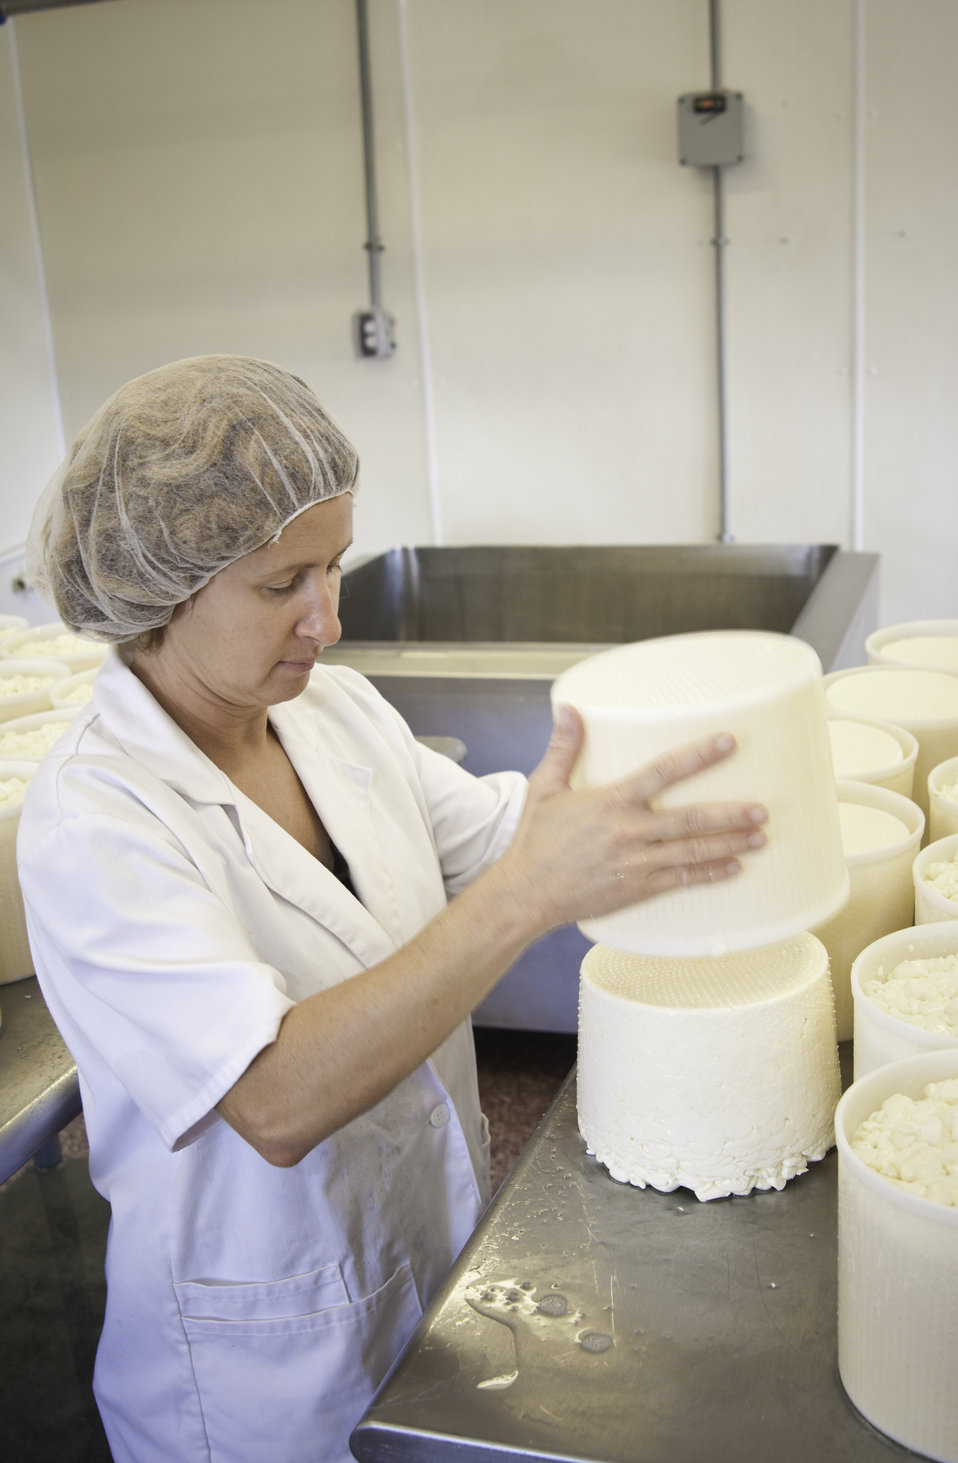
Chapel’s Country Creamery owner Holly Foster in Easton, MD turns milk curd in the hooping process. The curd will drain in the cheese hoops for 24 hours being turned during the process until the whey has drained and the curd has settled in a cheese round. The cheese is then aged 60 days or longer. The dairy’s Chapelle, Talbot Reserve and Bay Blue are placed in a climate-controlled cave, which gives the cheese its unique flavor. The cave-aged cheeses develop their own natural rind.